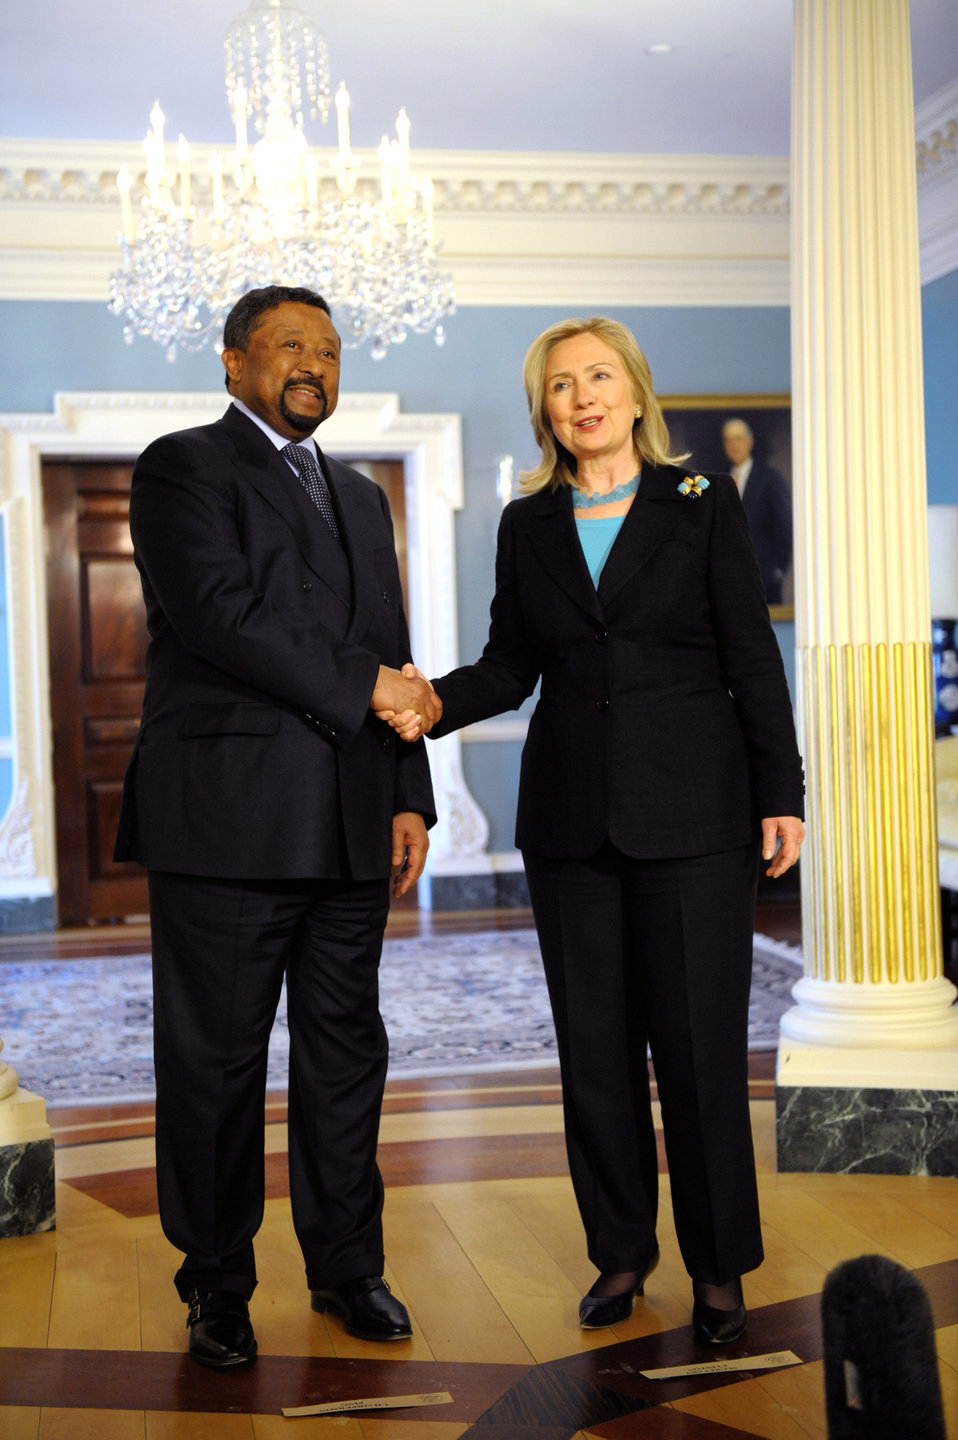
Secretary Clinton Shakes Hands With African Union Commission Chairperson Ping

U.S. Secretary of State Hillary Rodham Clinton and African Union Commission Chairperson Jean Ping shake hands after their bilateral meeting, at the U.S. Department of State in Washington, D.C., on April 21, 2011.